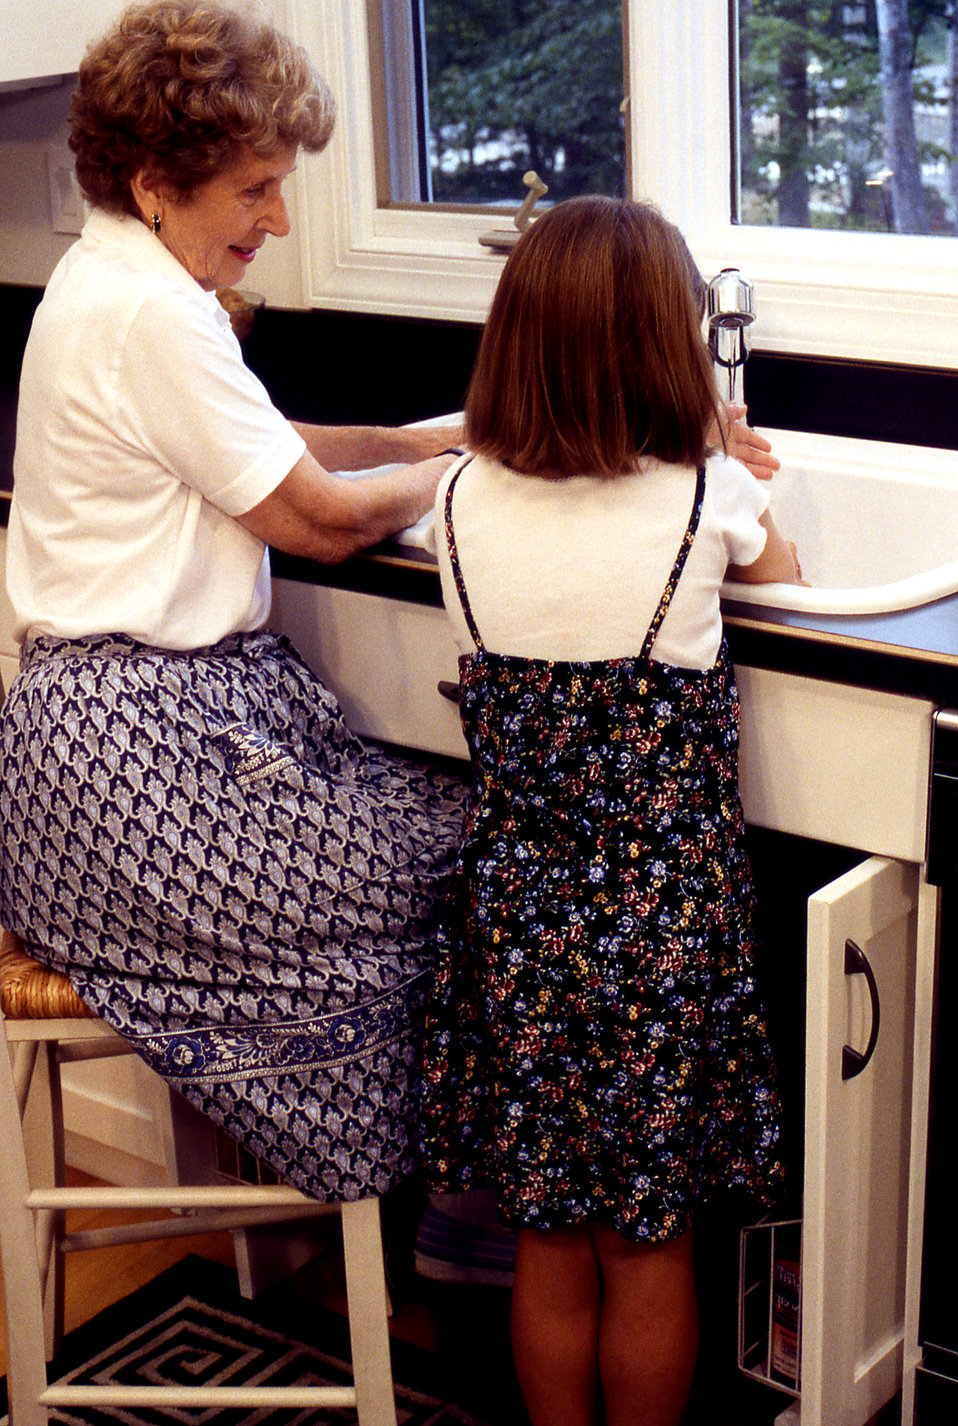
This grandmother and her granddaughter were in a customized kitchen outfitted with adaptable cabinetry, which allowed the elderly woman to pull her seat closely to the sink. While together the two prepared food, the woman's knees could be pulled up beneath the sink, so as to be accommodating to her seated food preparation activities. Adaptable features such as this can facilitate intergenerational activities by providing flexibility for the needs of different users, including those with, or without mobility or visual impairments.